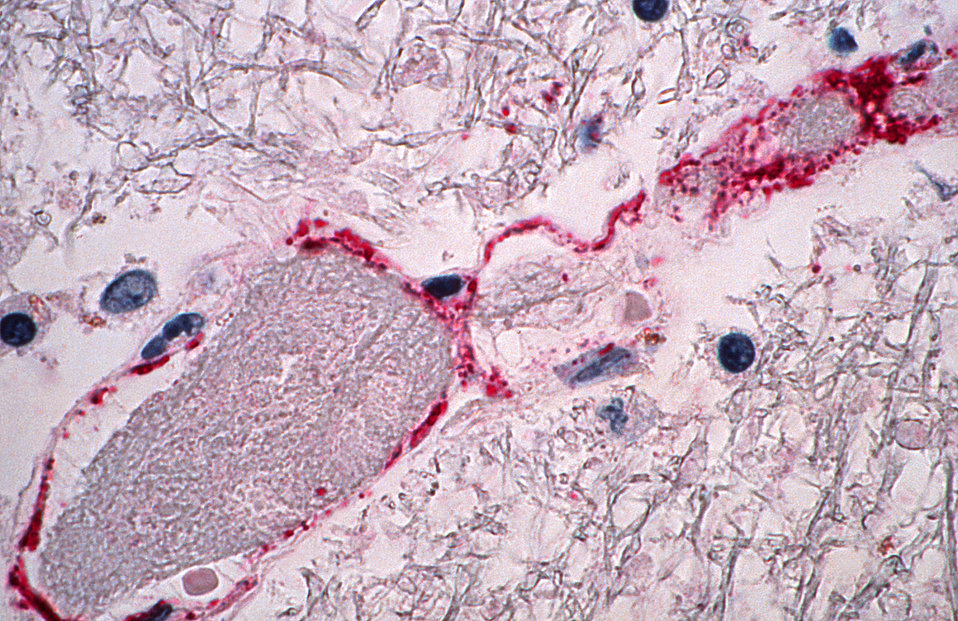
Using immunohistochemical (IHC) technique, this photomicrograph of a human tissue specimen, revealed some of the cytoarchitectural histopathologic changes associated with a Nipah virus infection, and its pathogenic influence upon the vascular elements depicted here, including the formation of a thrombus, and degenerative breakdown of the endothelial layer.